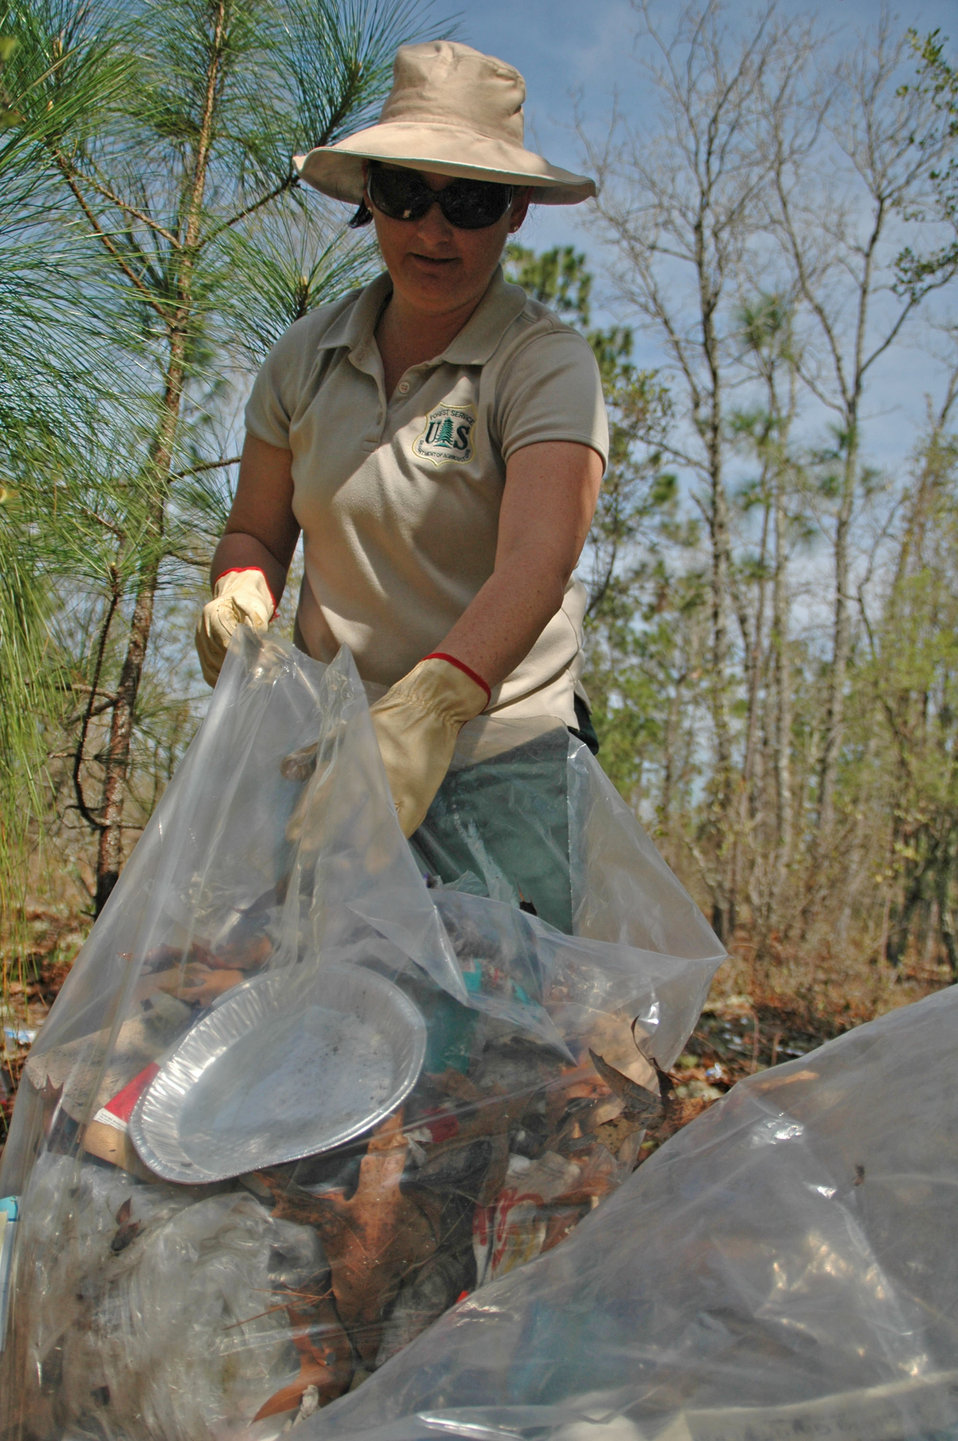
Sherry Gaston

Recreation Technician Sherry Gaston of the Apalachicola National Forest, Florida, bags trash littering the forest during Super-Clean Sweep.